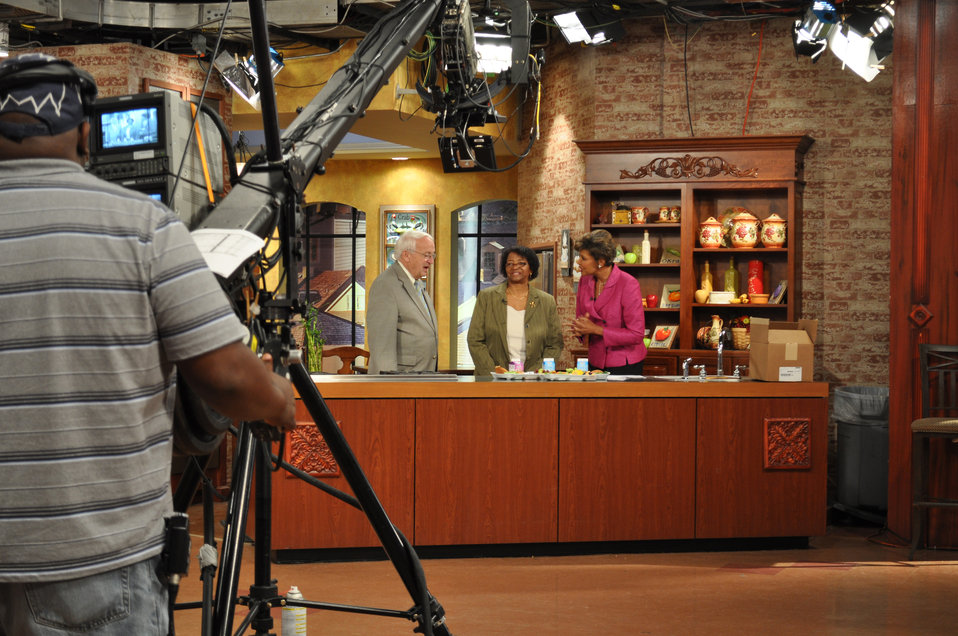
Agriculture Under Secretary for Food, Nutrition, and Consumer Services Kevin Concannon joined Orleans Parish Food Service Director Rosie Jackson to discuss healthy school meals on The Morning Show at WWL-TV in New Orleans, LA., on Aug. 21, 2012. The passage of the Healthy, Hunger Free Kids Act enables the U.S. Department of Agriculture’s (USDA) Food Nutrition Service (FNS) to nationally advance major improvements by transforming school food and promoting better nutrition and reducing obesity.